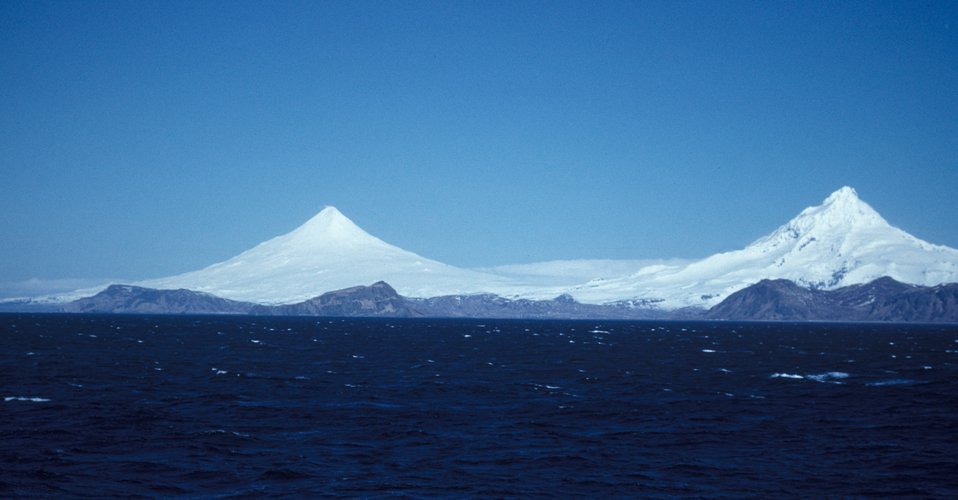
Magnificent view of Shishaldin and Isanotski volcanoes from offshore.